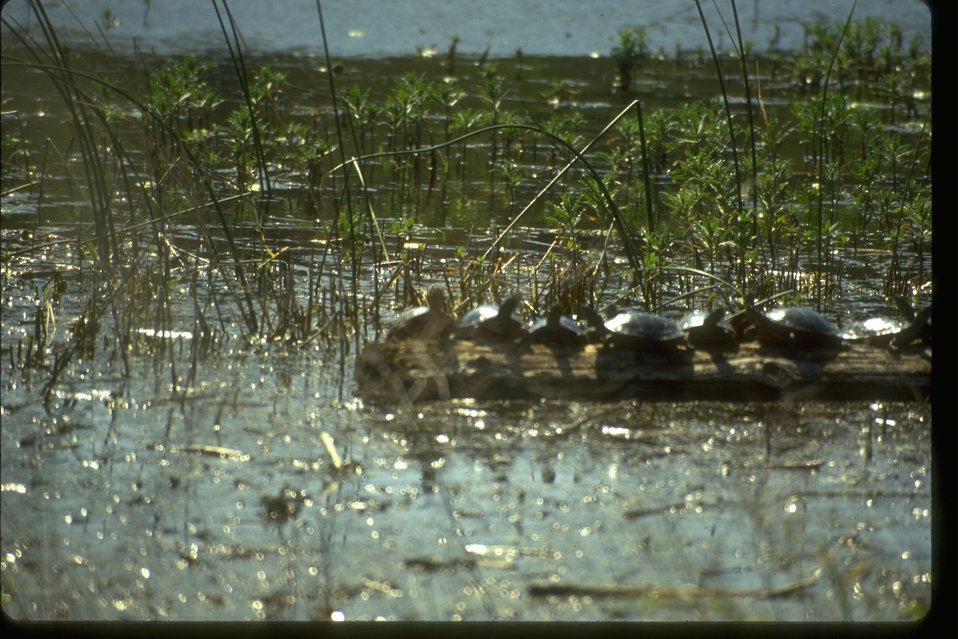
Turtles gather on log in Twin Lakes, Lincoln County, Washington.